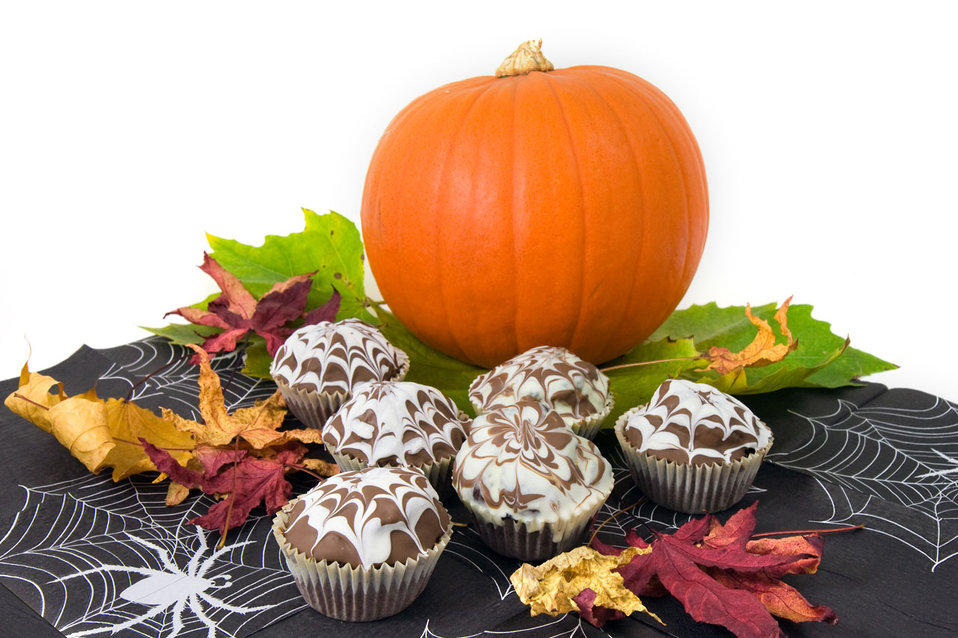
Halloween theme

Halloween autumn theme.